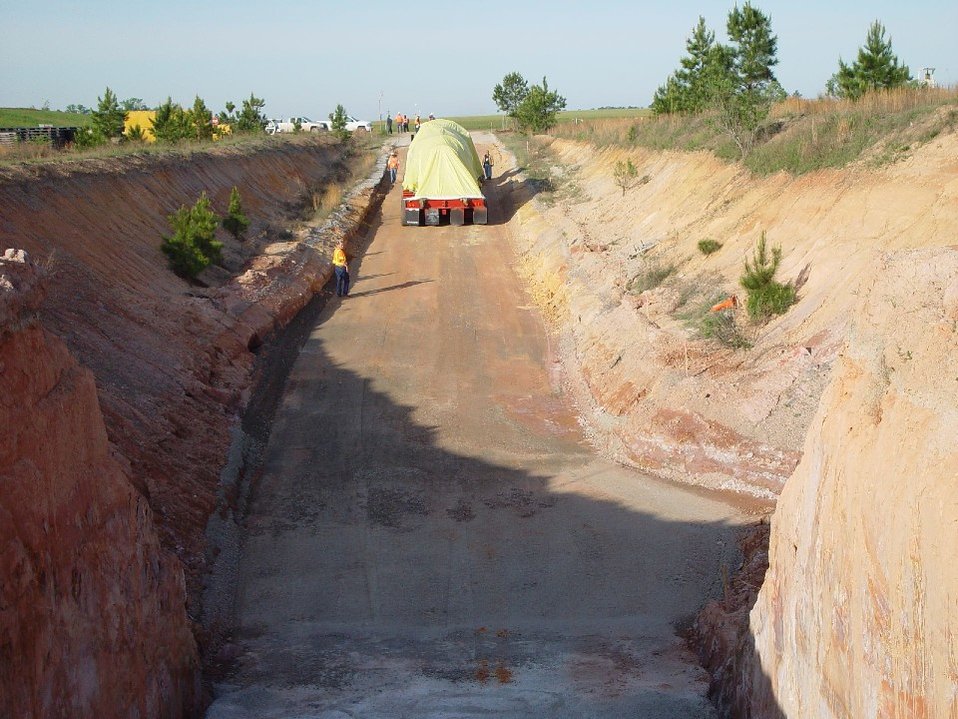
HWCTR PV Disposal, 4-14-11

Recovery Act workers removed the Heavy Water Components Test Reactor vessel, shown here, and permanently disposed it onsite.